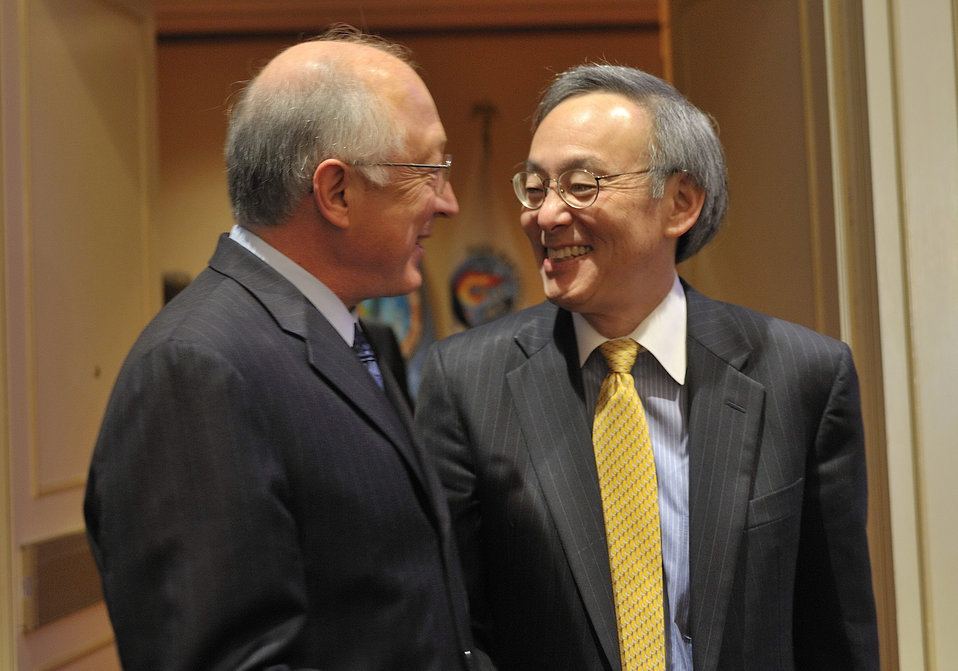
Tribal Energy Summit

DOI Secretary Ken Salazar and DOE Secretary Steven Chu during DOE Tribal Summit May 5th 2011.